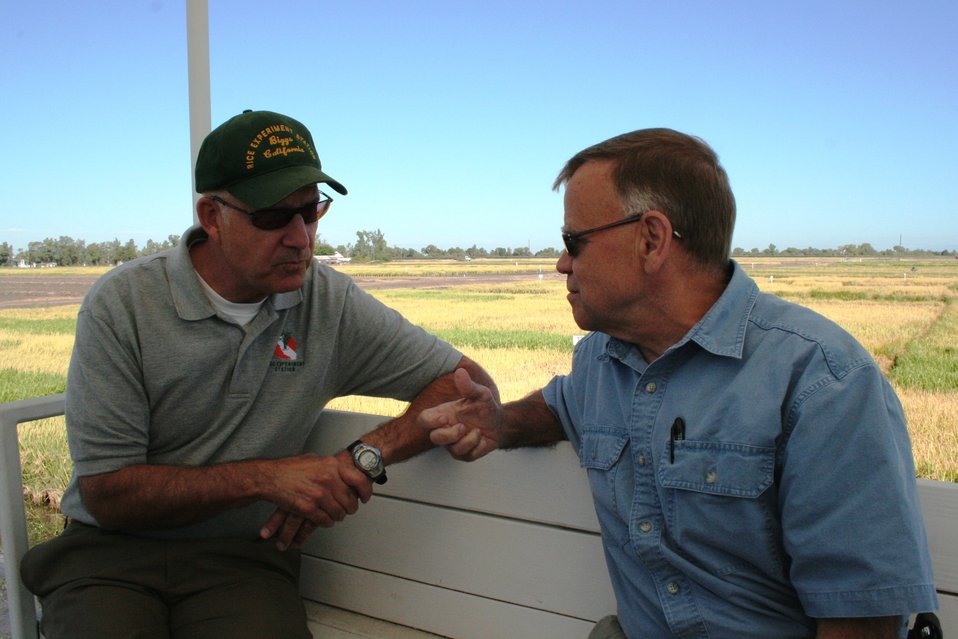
FDA's Rice Tour: Looking for Insights on Arsenic (0768)

FDA Commissioner Margaret A. Hamburg and colleagues visited research facilities and rice farms in California on Sept. 4-5, 2013 in an effort to gain a greater understanding of the presence of arsenic in rice. Here, Kent McKenzie, director of the Rice Experiment Station, talks with FDA's Deputy Commissioner for Foods and Veterinary Medicine Michael Taylor. For more information, read the FDA Voice blog:

• On Farms and in Labs, FDA and Partners Are Working to Get Answers on Arsenic in Rice